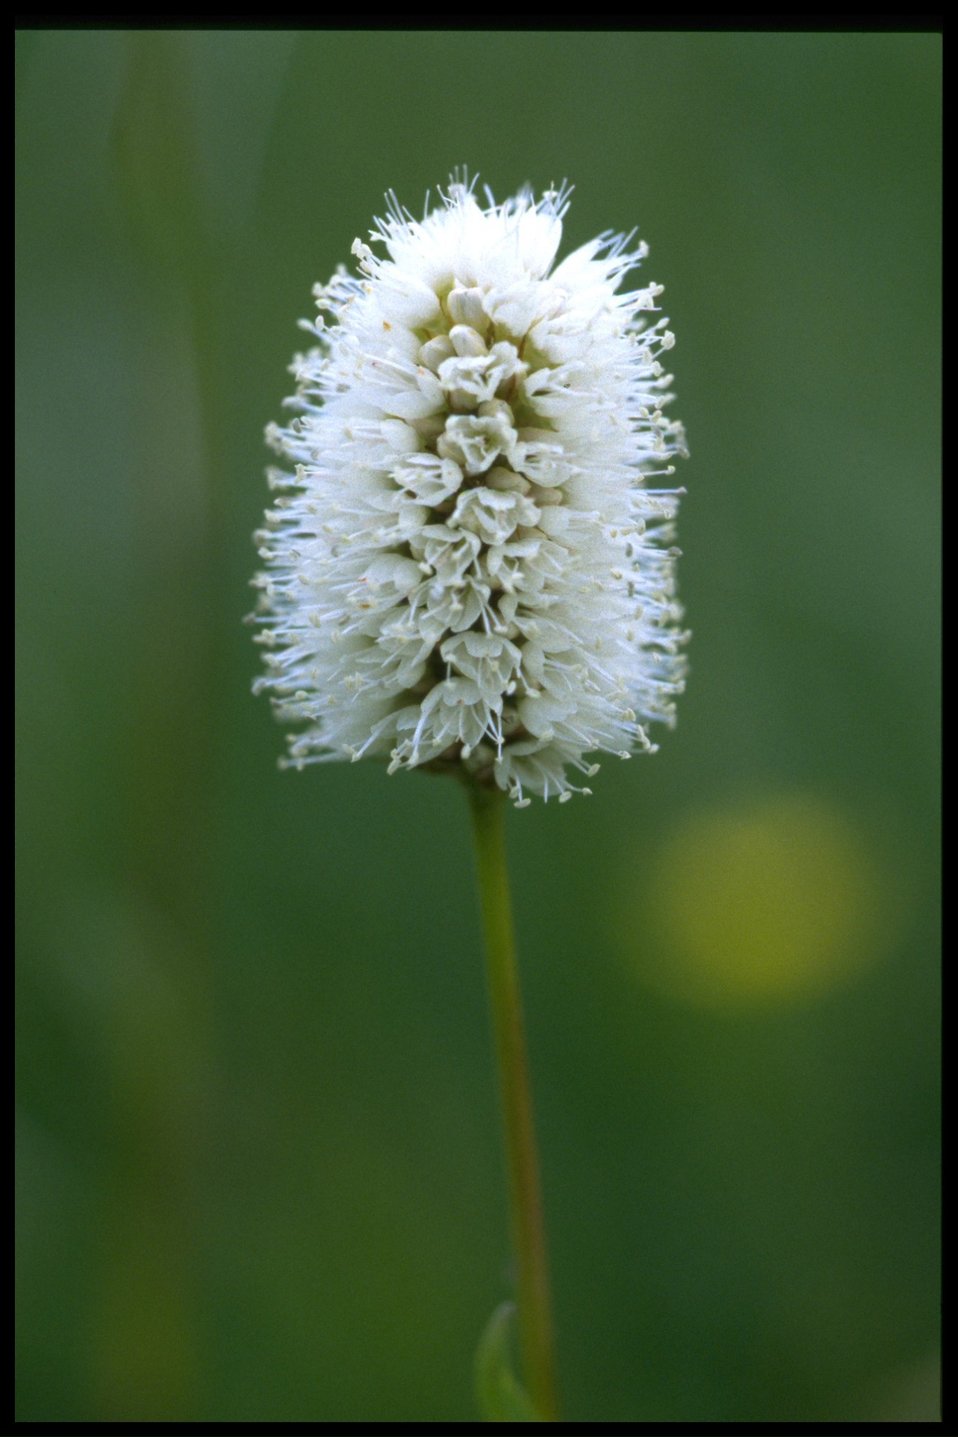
Closeup of American bistort (Polygonum bistoroides).